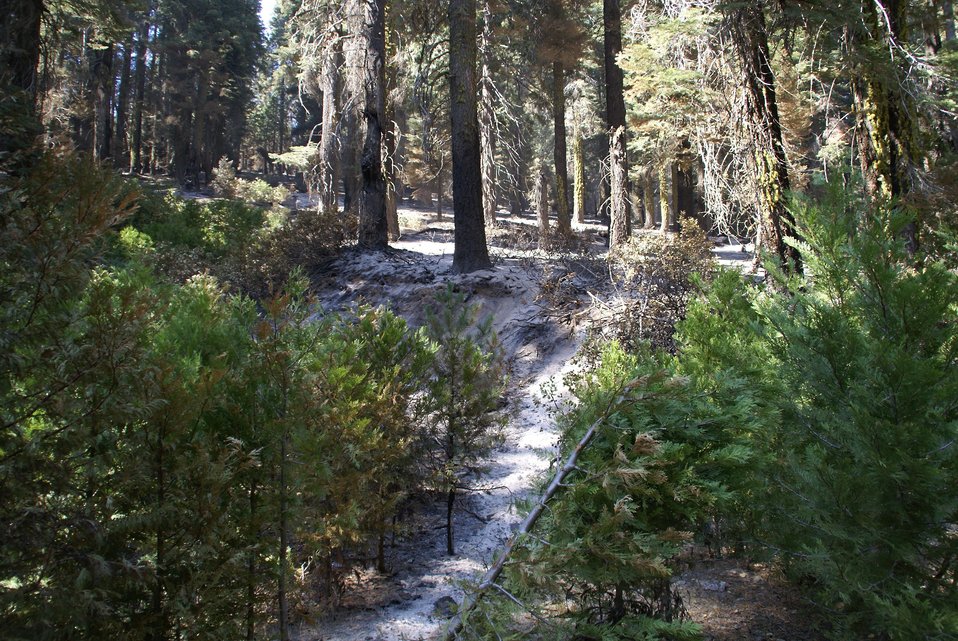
The East side of Bourland drainage area about a half-mile below the 3N01 road shows damage from the Rim Fire. BAER is a rapid assessment of burned watersheds by a BAER team to identify imminent post-wildfire threats to human life and safety property and critical natural or cultural resources on National Forest System lands and take immediate actions to implement emergency stabilization measures before the first major storms. Fires result in loss of vegetation exposure of soil to erosion and increased water runoff that may lead to flooding increased sediment debris flows and damage to critical natural and cultural resources. BAER team members implement seeding and mulching installation to prevent erosion, erect temporary water run-off control structures that will protect recovering areas, and installation of warning signs, replace safety related facilities, remove safety hazards, prevent permanent loss of habitat for threatened and endangered species, and prevent the spread of noxious weeds and protect critical cultural resources. The Rim Fire in the Stanislaus National Forest near in California began on Aug. 17, 2013 and is under investigation. The fire has consumed approximately 256,169 acres and is 84% contained.